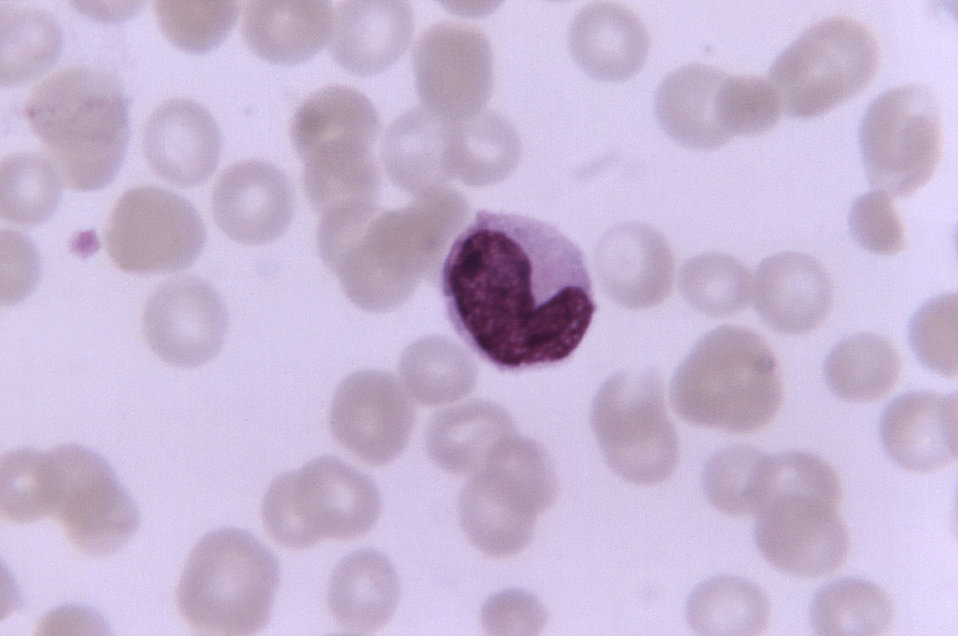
Magnified 1125X, this thin film photomicrograph of a blood smear, revealed the presence of a leukocyte (white blood cell, WBC) known as a monocyte.